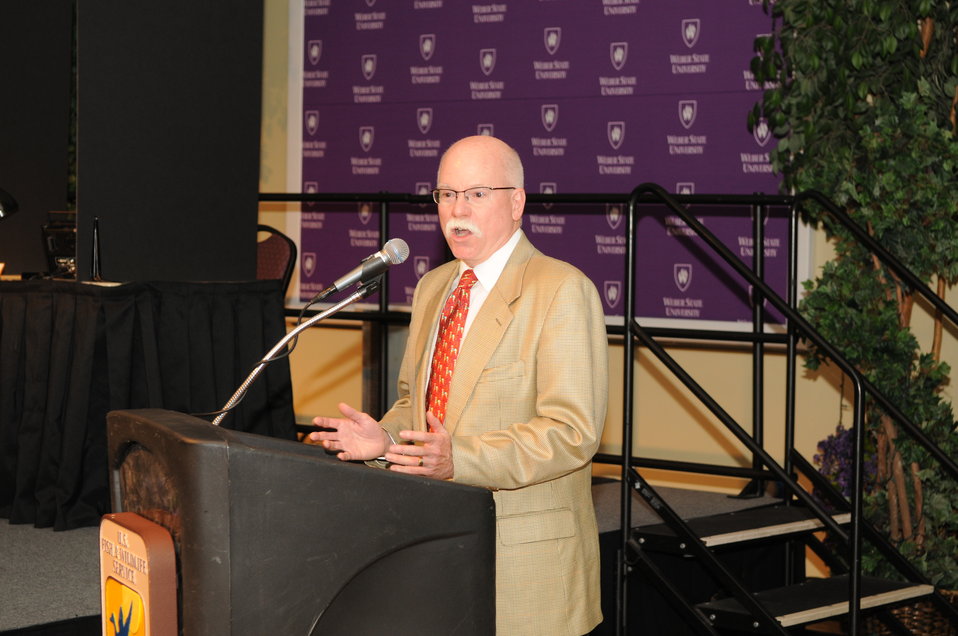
Opening Remarks

The U.S. Fish & Wildlife Service sponsored the 2012 Federal Duck Stamp Art Contest September 28 and 29 in Ogden, Utah, at Weber State University. A panel of five judges was responsible for choosing the art work used to design the 2013-2014 Migratory Bird Hunting and Conservation Stamp.